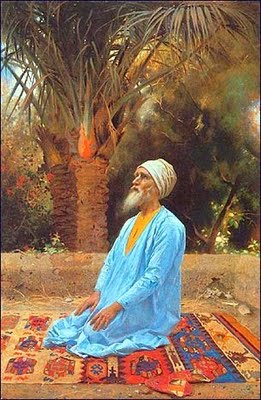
Español: 'La Oración', 1894, por Pierre Jan Van Der Ouderaa (1841-1915).